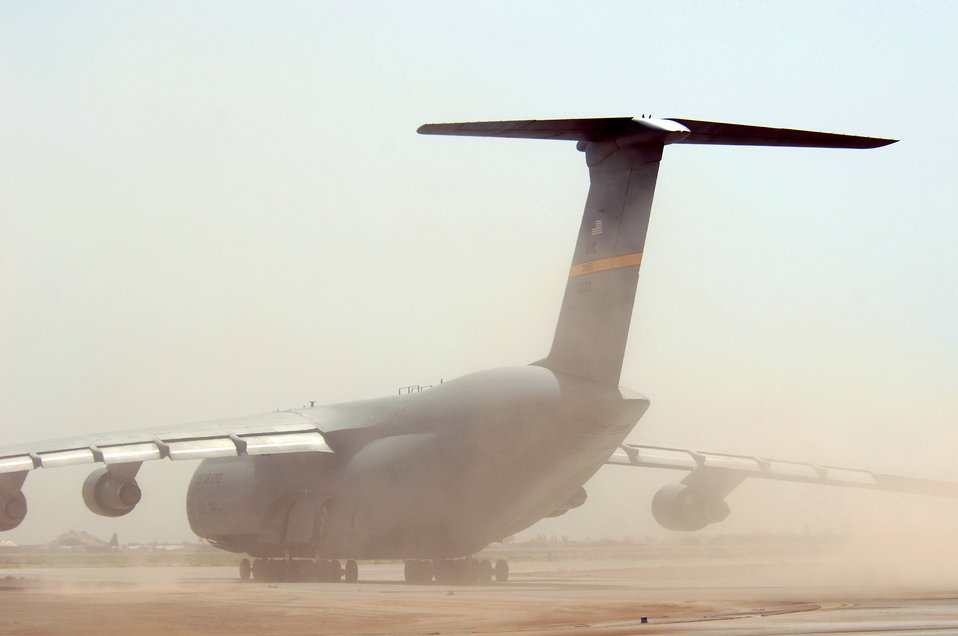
Moving the goods at Balad

A C-5 Galaxy taxis for takeoff at Balad Air Base, Iraq, on Tuesday, June 6, 2006. The aircraft is from Dover Air Force Base, Del.